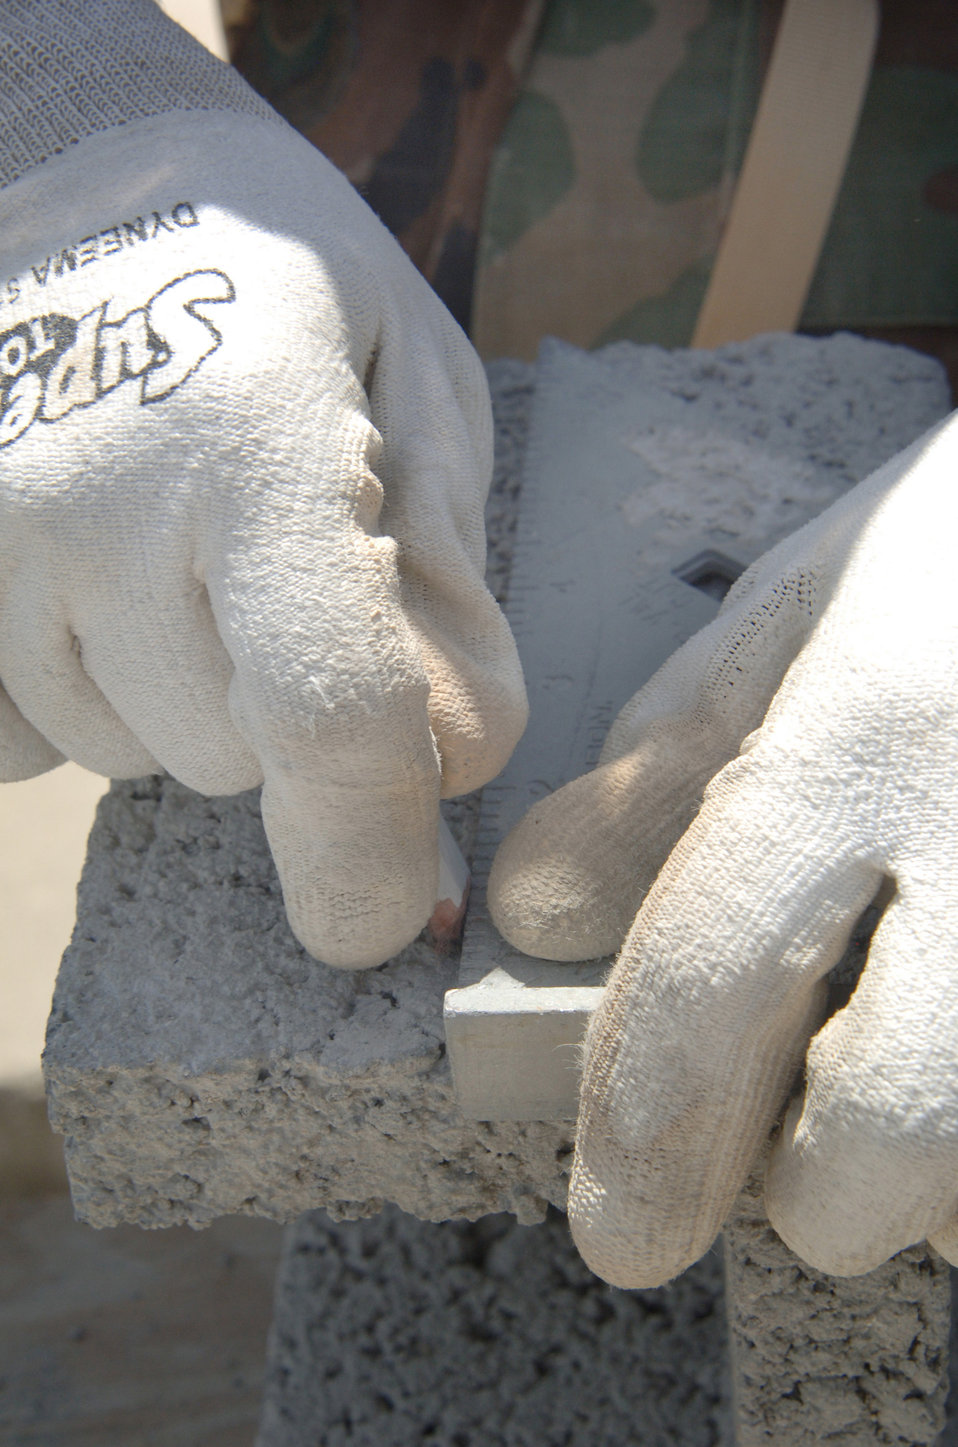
Reserve engineers in Saint Lucia

Senior Airman Trevon Walton marks a cinder block before cutting it for a project on Saint Lucia's southern coast on Saturday, April 8, 2006. The project includes building an operations center and barracks for the police force in support of Saint Lucia's counter-drug operations. Airmen Walton is with the 433rd Civil Engineer Squadron at Lackland Air Force Base, Texas.